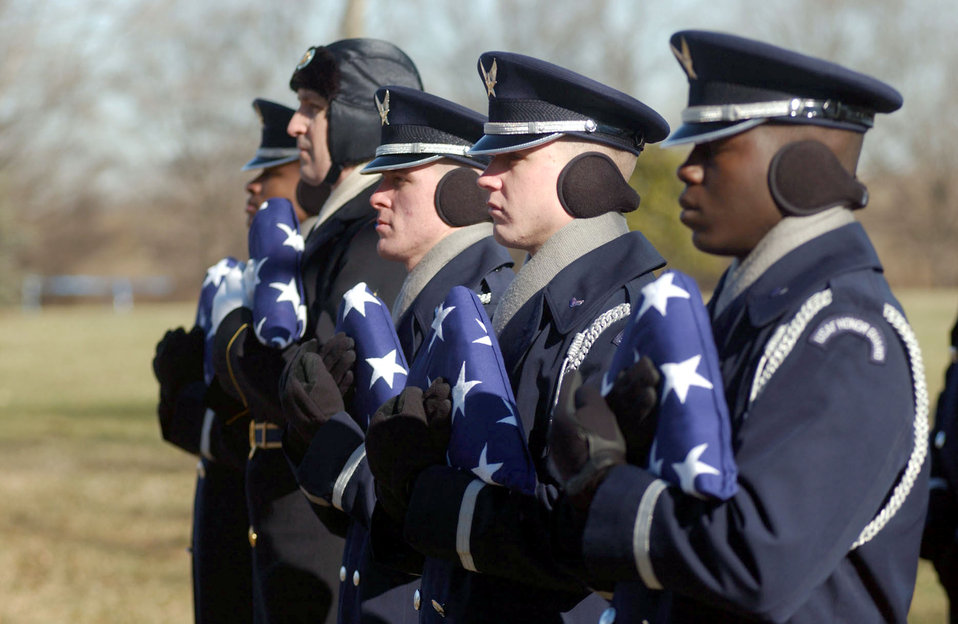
Servicemembers laid to rest

ARLINGTON, Va. -- Members of a joint honor guard carry flags in honor of five military members who were killed when their MH-53M Pave Low helicopter crashed Nov. 23 in Afghanistan. A full-honor mass funeral was held at Arlington National Cemetery on Jan. 21.